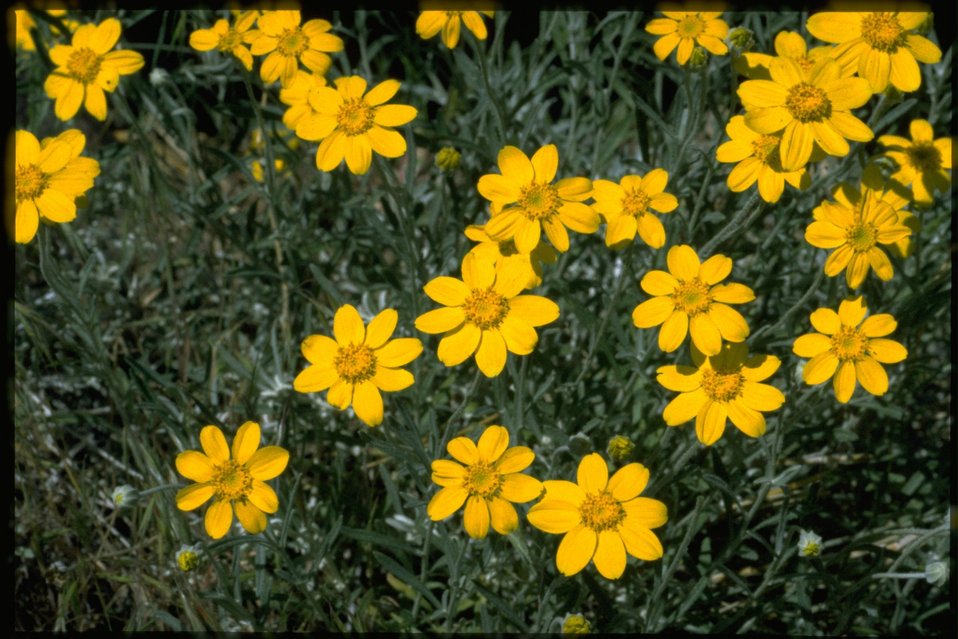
Closeup shot of Asteraceae.